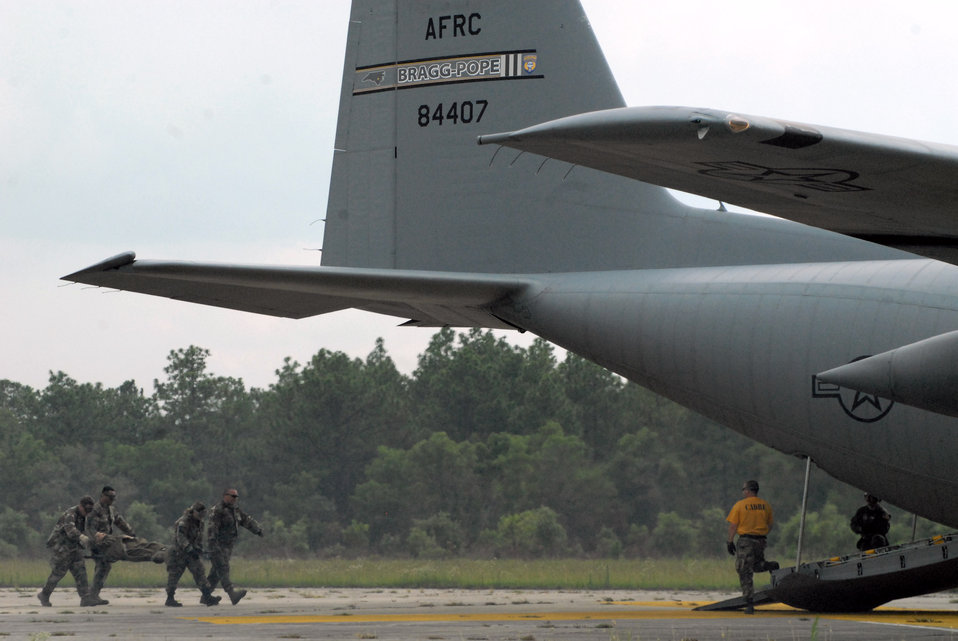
Pope's AES trains Travis Airmen for deployment

Airmen from the 60th Medical Group at Travis Air Force Base, Calif., load a litter on to a Pope Air Force Base C-130H Hercules during mobile aeromedical staging facility training at Fort Bragg's Camp Mackall, N.C., July 10.